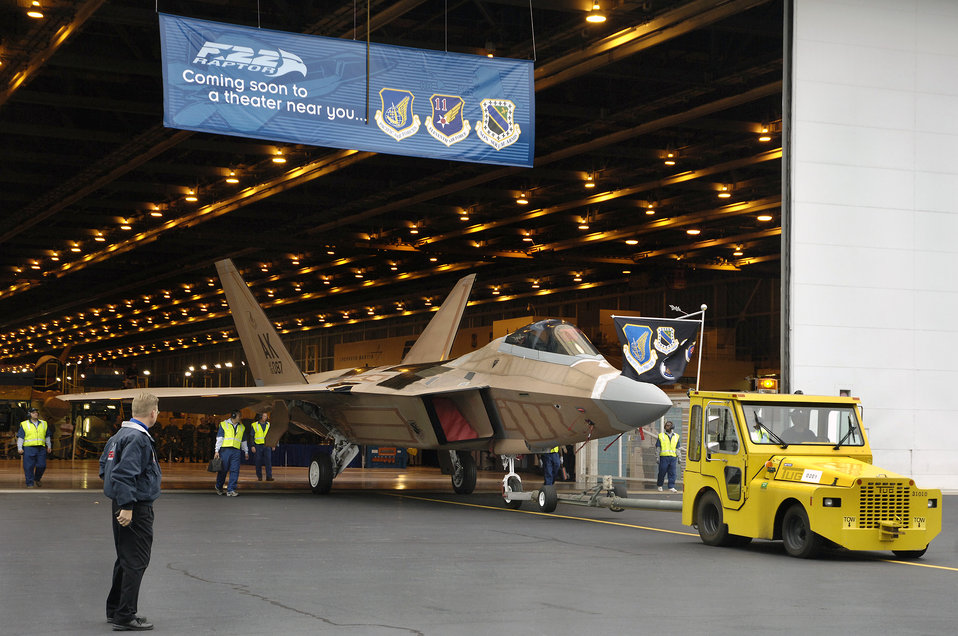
First Pacific F-22 rolls out

Lockheed Martin rolls out the first combat-capable F-22 Raptor stealth fighter destined for operations in the Pacific Theater. It will be assigned to Elmendorf Air Force Base, Alaska. The F-22 dominates any adversary through unmatched performance achieved through stealth, supercruise speed, agility, precision and a complete view of the battlespace achieved with the advanced sensor suite embedded in the aircraft.